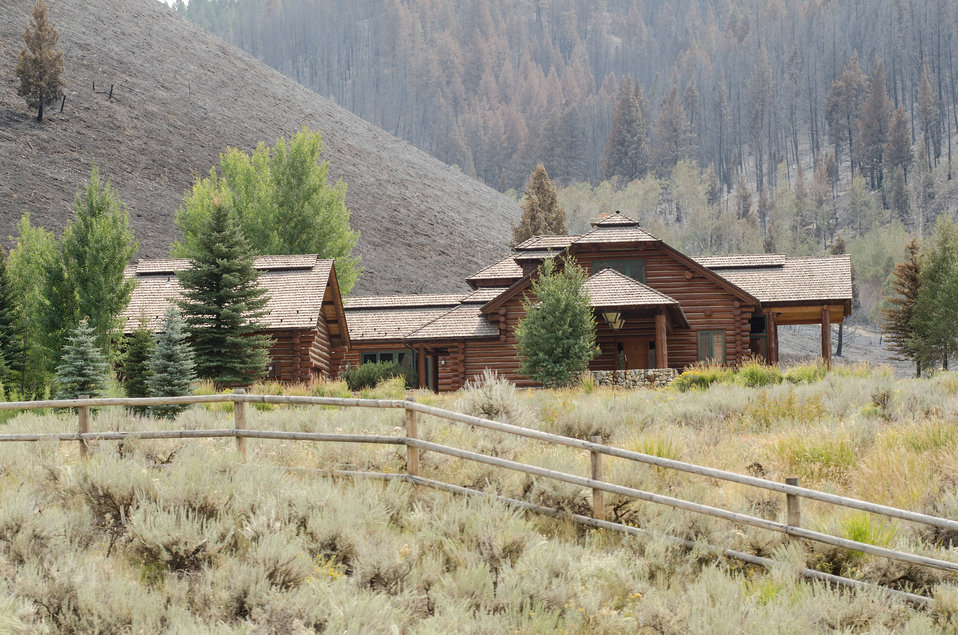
Thanks to the efforts of Wildland Firefighters, support crews and other first responders, homes and residential communities were (with few exception) saved from major damage, from the Beaver Creek Fire, near Hailey, ID, in the interface of U.S. Department of Agriculture (USDA) Forest Service (FS) and Sawtooth National Forest and Bureau of Land Management (BLM) lands, on Wednesday, Aug 21, 2013. In this community, major sections of hillside were charred, some suffered burnt trees, grass lands and fences.